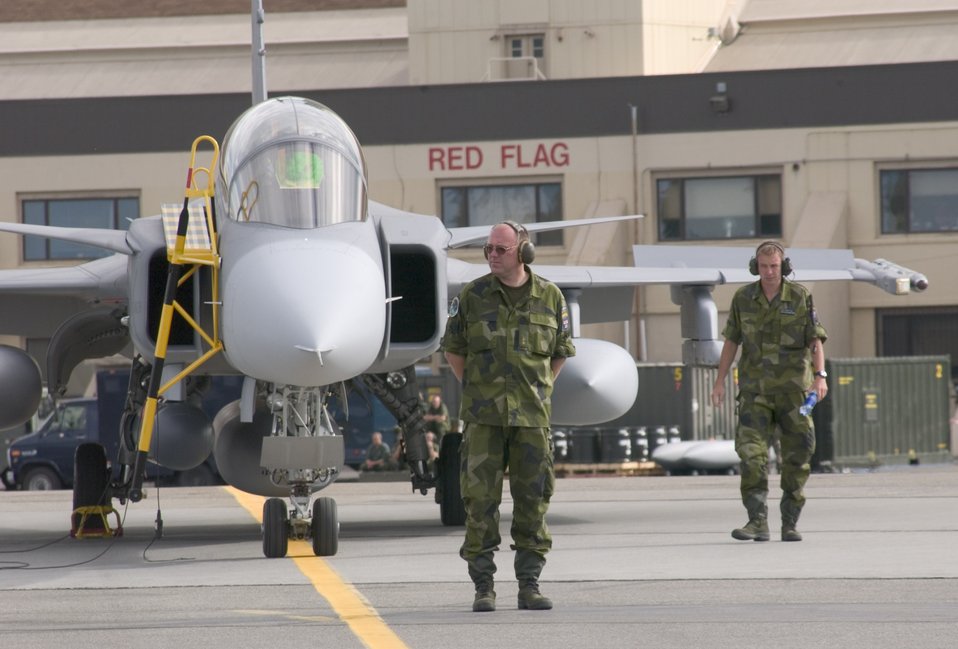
Transformation redefines multi-national exercise

Swedish air force maintainers at Eielson Air Force Base, Alaska, wait for the pilots who will flying their Gripen aircraft during Cooperative Cope Thunder on July 25. The multi-national exercise continues through Aug. 5.